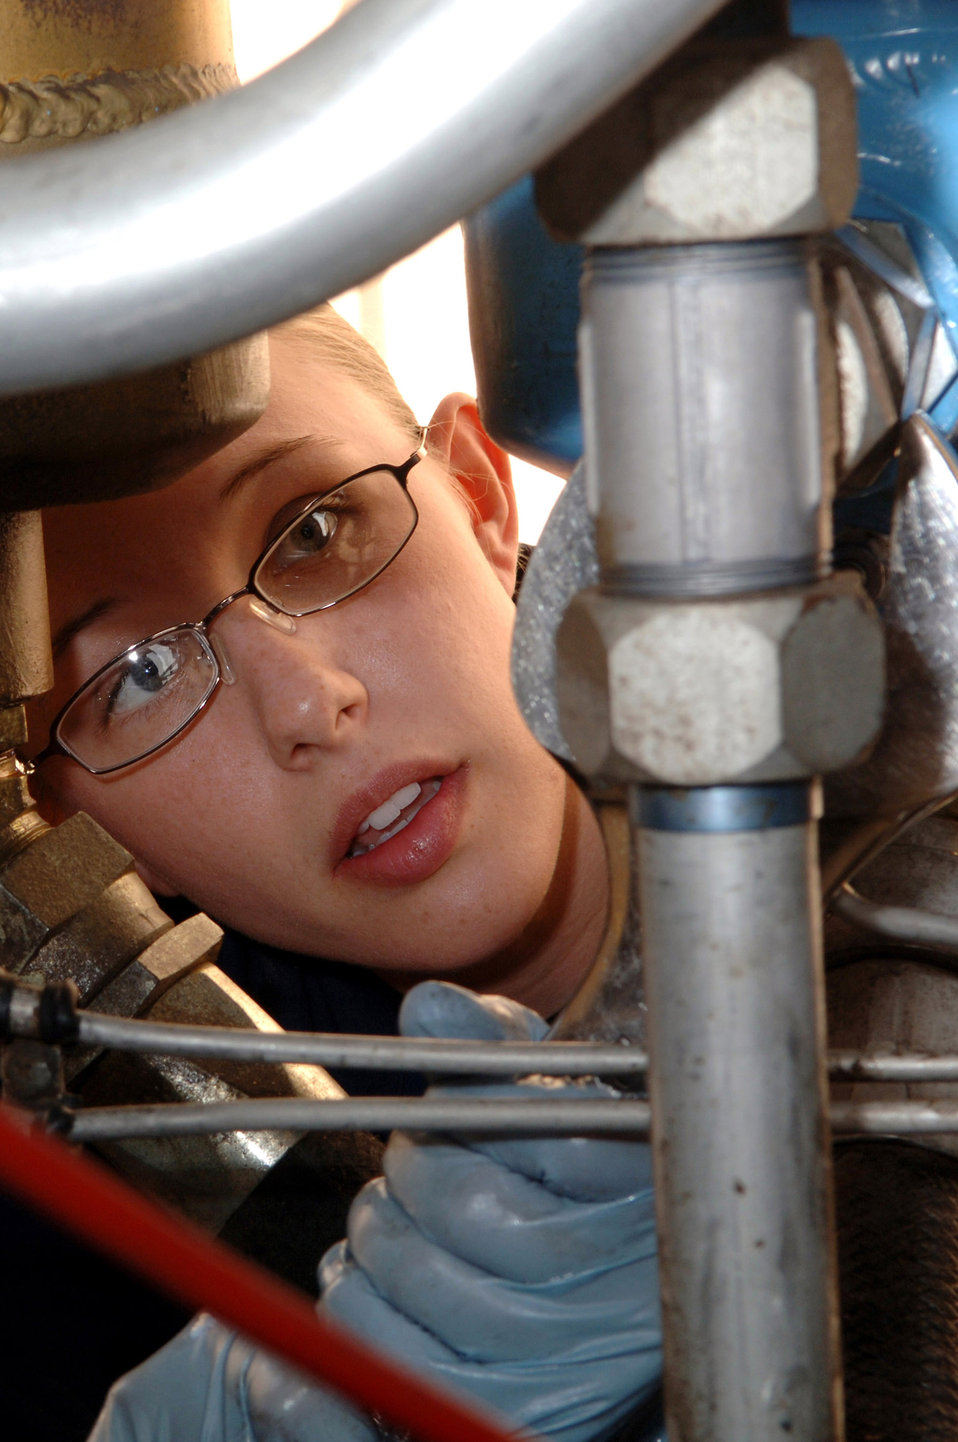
Aerospace ground equipment sheds light on mission

Staff Sgt. Jamie Harwell reassembles a low pressure filter on a hydraulic pumping unit Jan. 20 at a Southwest Asia air base. Sergeant Harwell, assigned to the 379th Expeditionary Maintenance Squadron, had the hydraulic unit 100 percent mission ready in less than three hours. She is from Cleveland and deployed from Grand Forks Air Force Base, N.D.